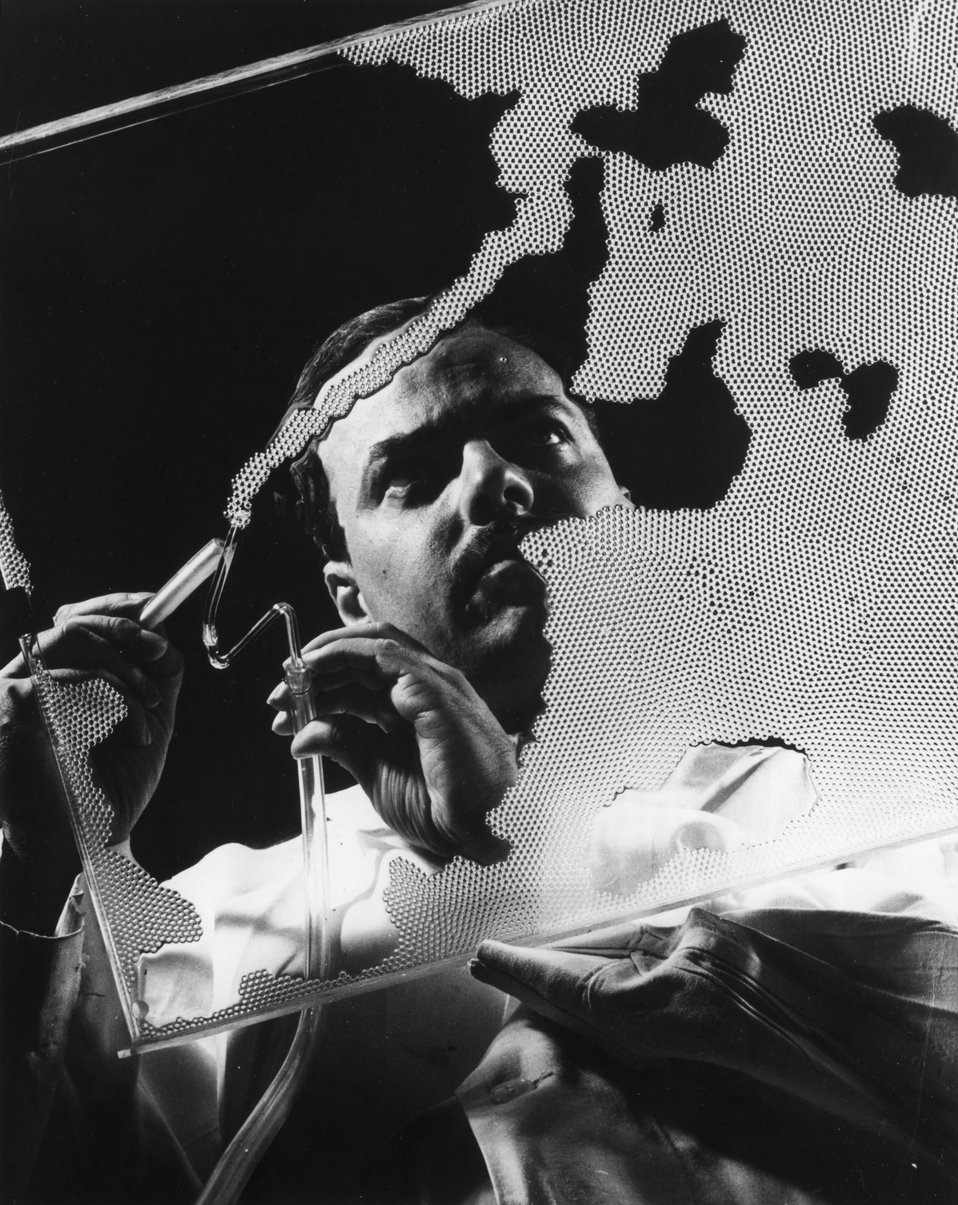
Dr. William Mullins of the Westinghouse Research Laboratories illustrates with soap bubbles how atoms group themselves into orderly arrangements or 'crystal structures'. c. 1961